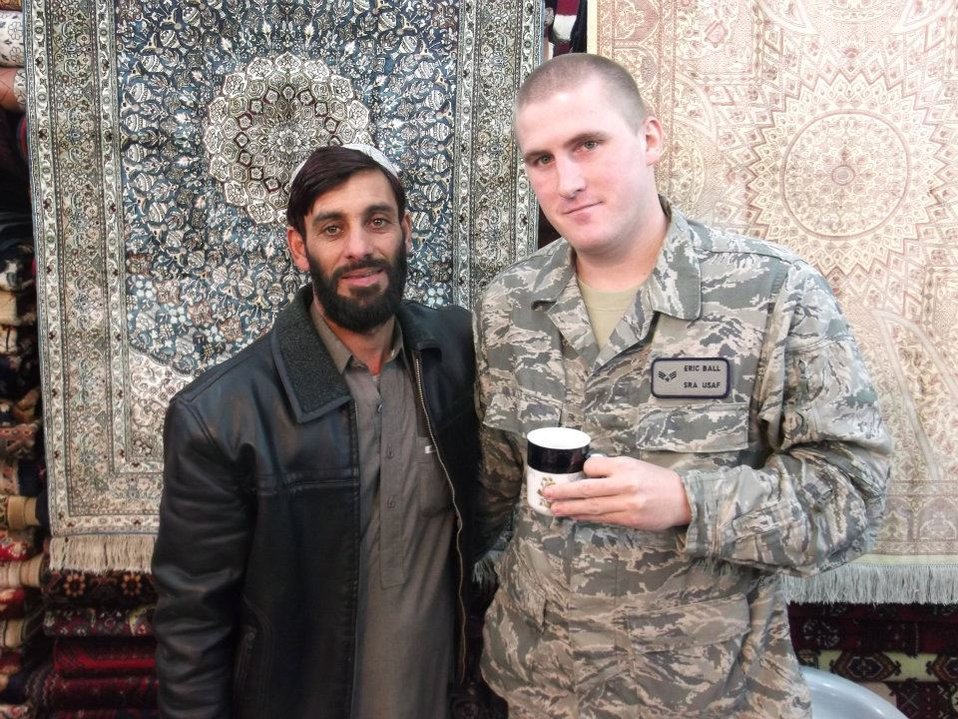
Carpet merchant in Afghanistan

Senior Airman Eric Ball poses for a photo with an Afghani carpet merchant on Kandahar Air Base, Afghanistan. The six-month deployment was an experience Ball said was invaluable and allowed him to forge strong friendships with people from all over the world.